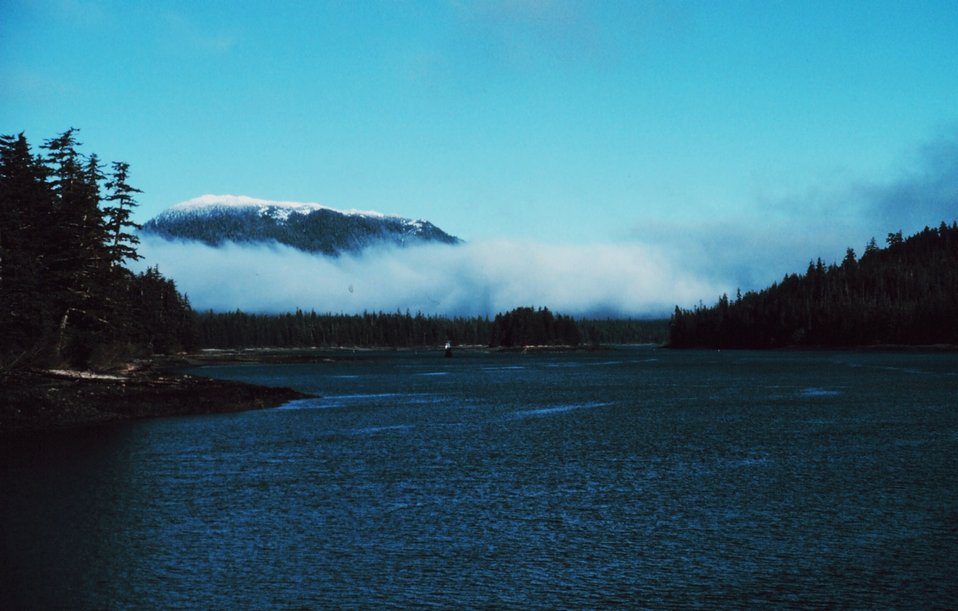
Wrangell Narrows